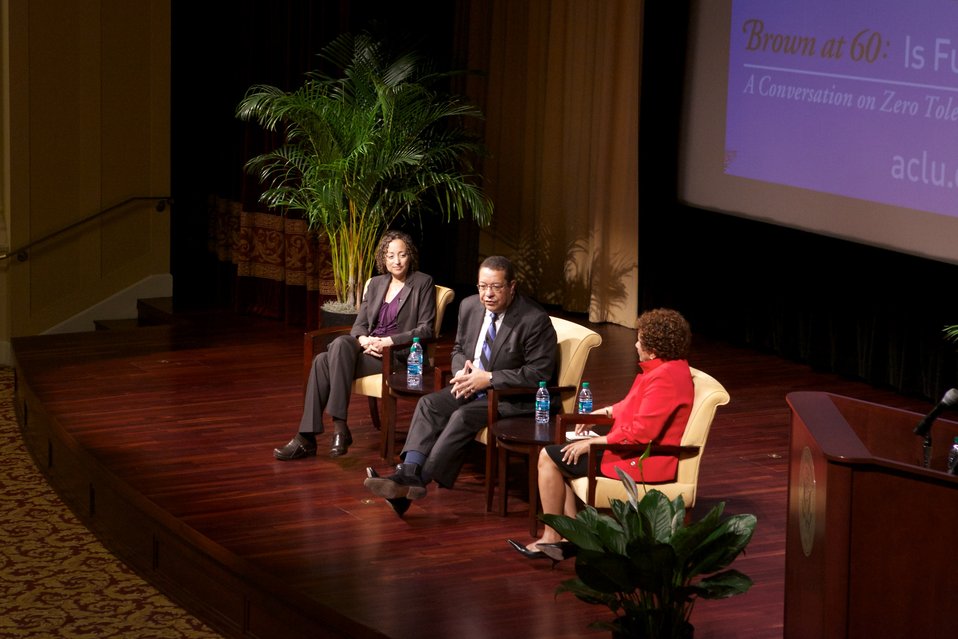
Brown at 60: Is Full Equality Within Our Grasp? A Conversation on Zero Tolerance, Segregation, and the Promise of Justice